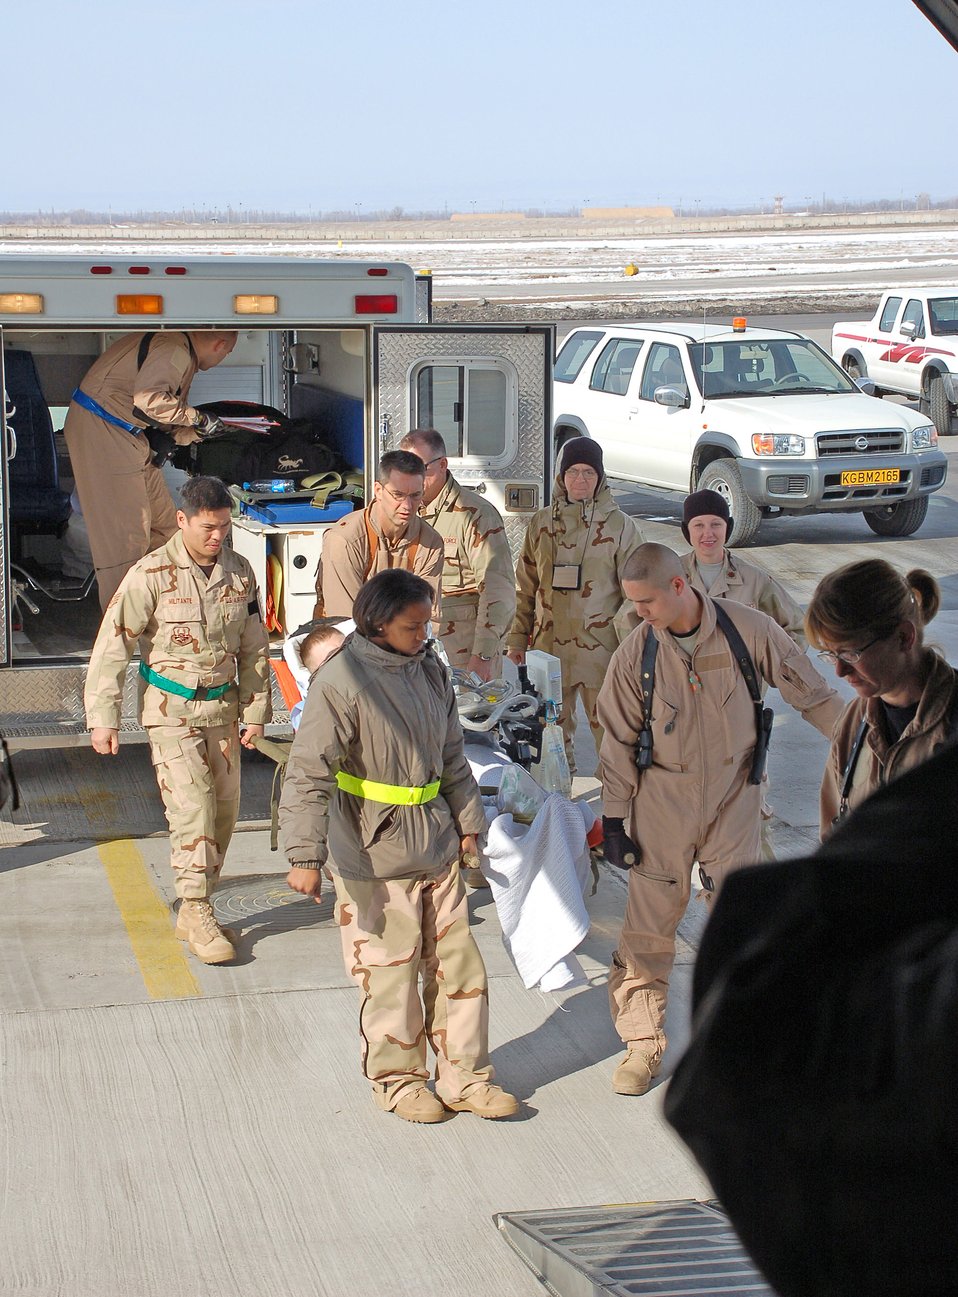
Quick actions save Airman's life

A medical team evacuates Airman 1st Class James Garrett Feb. 26 at Manas Air Base, Kyrgyzstan. Airman Garrett, deployed from Shaw Air Force Base, S.C., is part of the 376th Expeditionary Civil Engineer Squadron firefighter's dodgeball team, which was facing off against the 376th Air Expeditionary Wing Staff team Feb. 25 when he collapsed. Players from both teams pulled together to assist him once they realized what had happened. Airman Garrett is a 376th ECES fire protection journeyman.